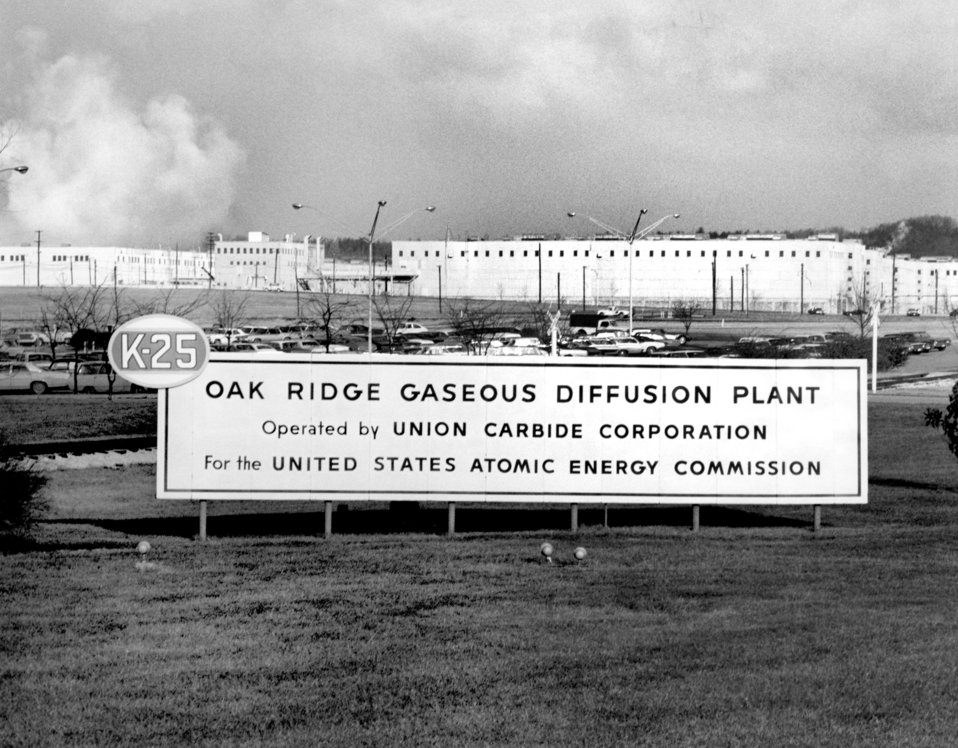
Sign Entrance K-25 Plant Oak Ridge 1971

71-02 DOE photo W.E. Hall 1-19-1971 Oak Ridge Tennessee